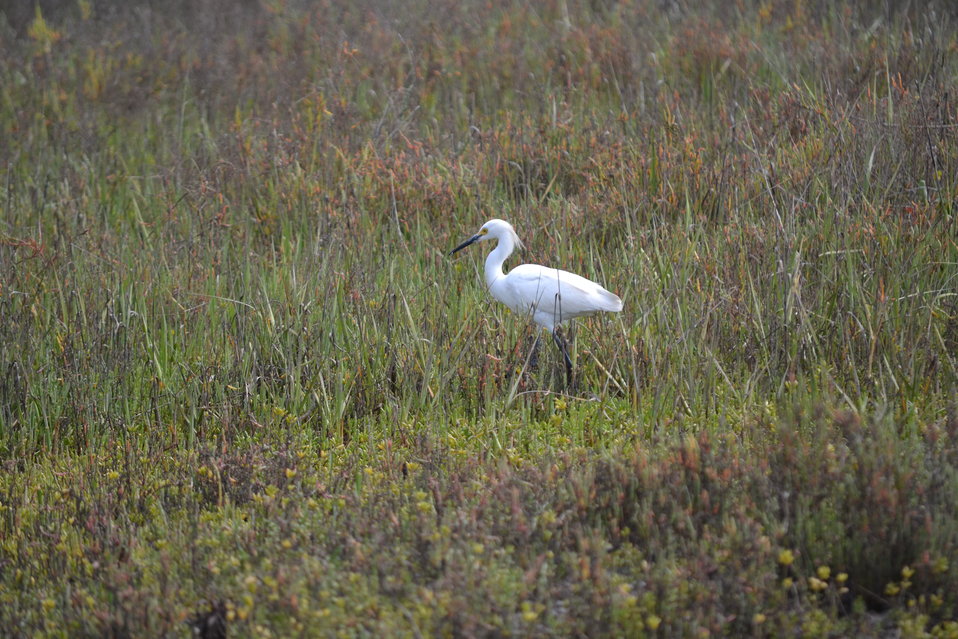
Snowy egret, April 2011